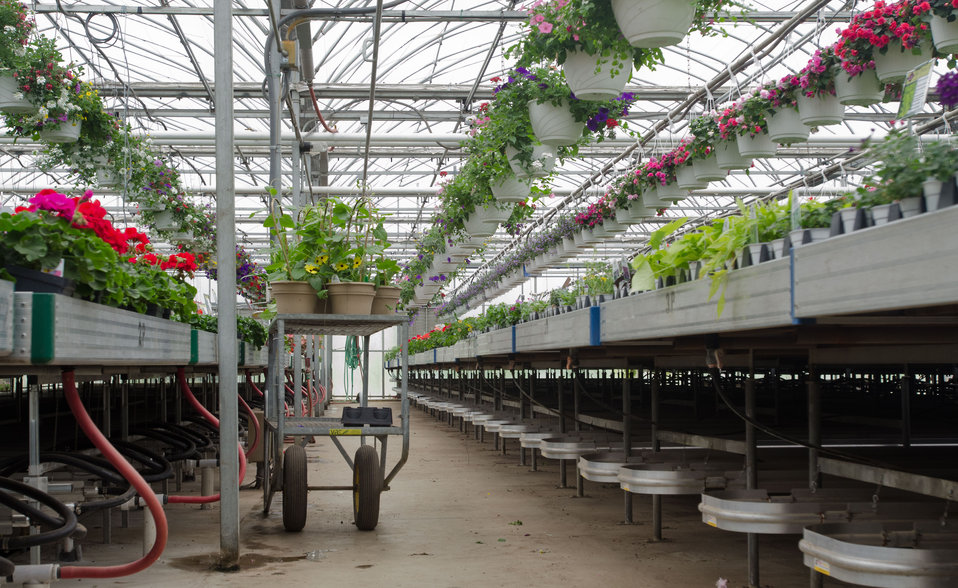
Water filled fin-tube heating element under plant tables at Good Harvest Farm on April 19, 2011 in Strasburg, PA, was completed using a Rural Energy for America Program (REAP) grant for the renovation six months ago that replaced an 80-year old structure with a new 4,000 sq. ft. structure that features energy efficient glass roof with curtains that block or trap heat, radiant heaters in or above the floor, and the replacement of an oil-fired hot-air furnaces with propane fueled boilers that supply fin-tube and cement embedded tube elements with hot water. With current fuel prices, there is a projected 2011 energy cost savings of more than $20,000; a 40% reduction in energy costs – exceeding projected savings. Plant health and quality has improved and been more consistent because the temperature and humidity is computer controlled and distributed evenly throughout the facility. Utilizing sensors and a roof mounted weather station the system can maintain four different climate zones 24-hours a day. Two 1,000,000 BTU propane fueled boilers heat the water to 190 degrees for the 8,000 feet of fin-tube heating elements were used where the original foundation, and the 8,000 feet of tubing that was embedded in a new cement foundation. After traveling through the energy efficient system, water only looses 20 degrees. When temperatures become to hot, motorized roof vents open to allow rising heat to escape; a 98% energy savings from massive fans that previously forced air out. Both systems create a microclimate in and round the plant trays in the growing and sales room. Representing Good Harvest Farm Chris Powell says, “You don’t need to have a lot of land to have a lot of green houses. There are places in cities where vegetables are grow on store roof tops and selling them below in the same structure.”